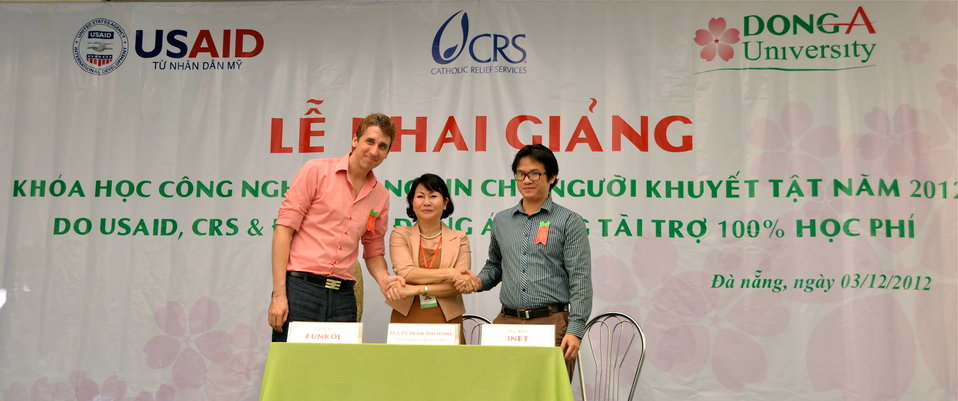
New class of students starts at Dong A Univeristiy with support from USAID and CRS

Businesses join in support of people with disabilities
Photo: @USAIDVietnam
December 3, 2012